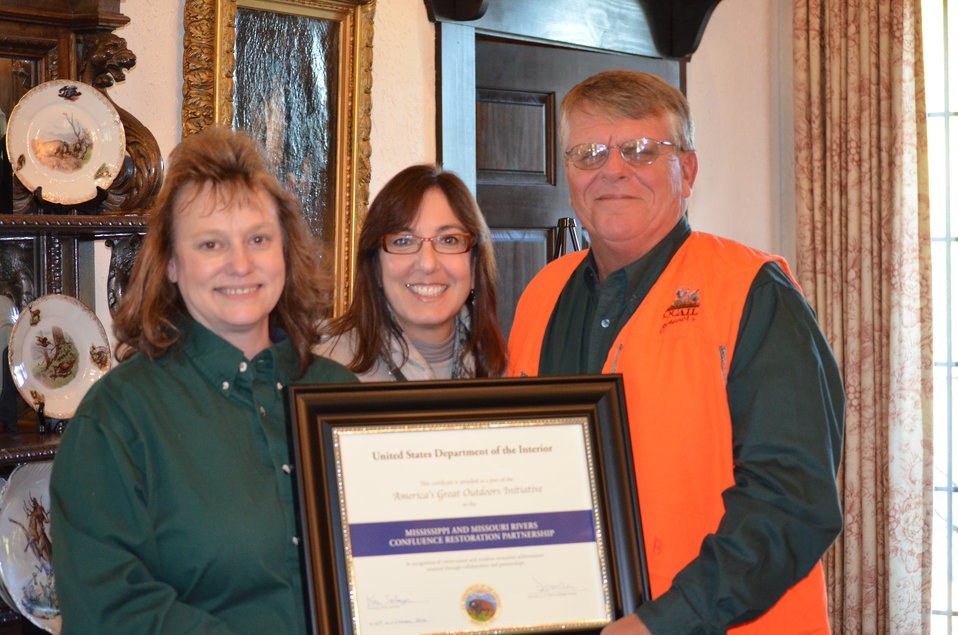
Honoring Pheasants Forever

Award presented to Pheasants Forever for the organization's role in confluence conservation. Pheasants Forever has been s a strong supporter for advancement of confluence floodplain conservation, including providing financial support to provide a full time USFWS biologist for the Confluence Focus Area. USFWS/Ashley Spratt